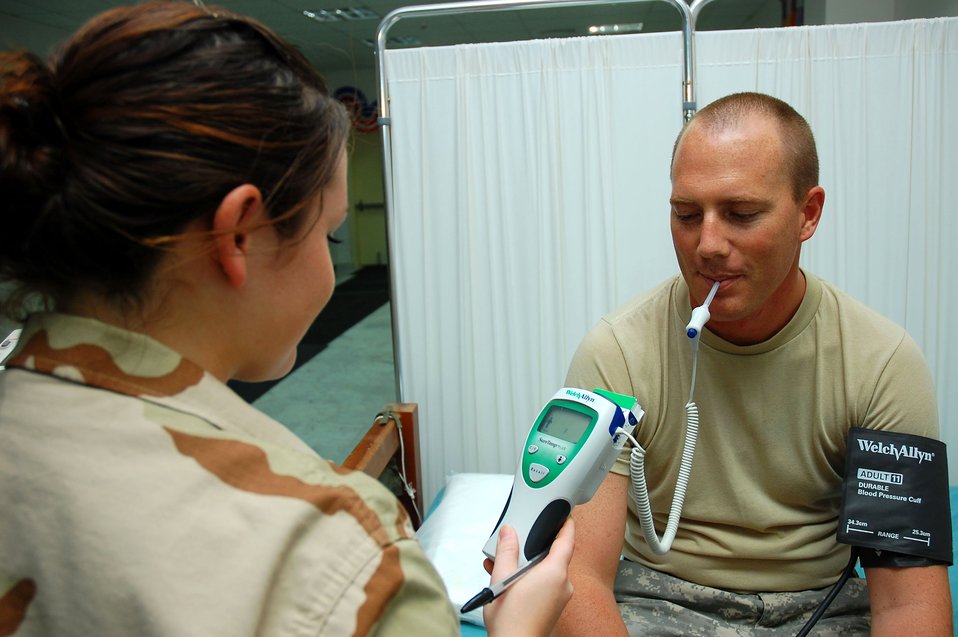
Airmen keep Soldiers, Marines in the fight

Senior Airman Elle Liza Marie Franz conducts a vital check on Army patient Sgt. Scott Boomershire at the Contingency Aeromedical Staging Facility Sept. 24 in Southwest Asia. The CASF is a 24-hour medical holding and staging facility, which averages about 300 patients per month. Airman Franz is a 386th Expeditionary Medical Group medical technician.